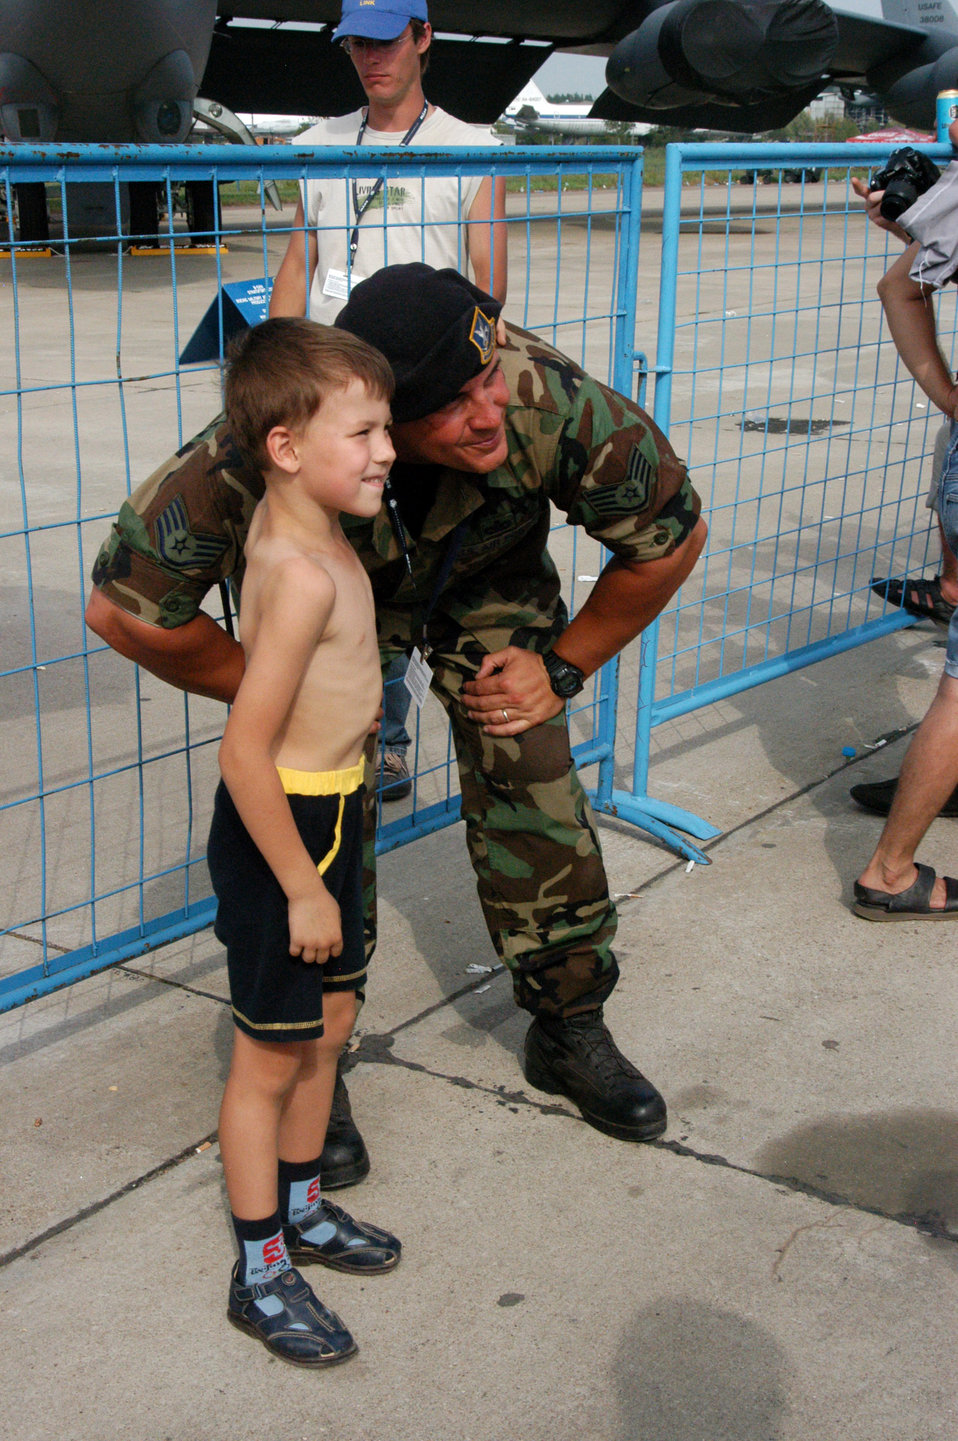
Airmen in Moscow reach out to children

Staff Sgt. Jason Kidd poses for a photo with a young visitor to the Moscow International Air Show on the first day the show was open to the public Aug. 24 in Zhukovsky, Russia. The show began Aug. 21 and concluded Aug. 26. Defense Department participation consisted of static displays and aerial flight demonstrations. The air show is one of the premier events of its type in the world. U.S. participation in the air show demonstrated America's commitment to international security, promoted international cooperation and contributed to U.S. foreign policy objectives. About 65 Airmen from bases in Europe and the states participated in this year's air show. Sergeant Kidd is assigned to the 52nd Security Forces Squadron from Spangdahlem Air Base, Germany.